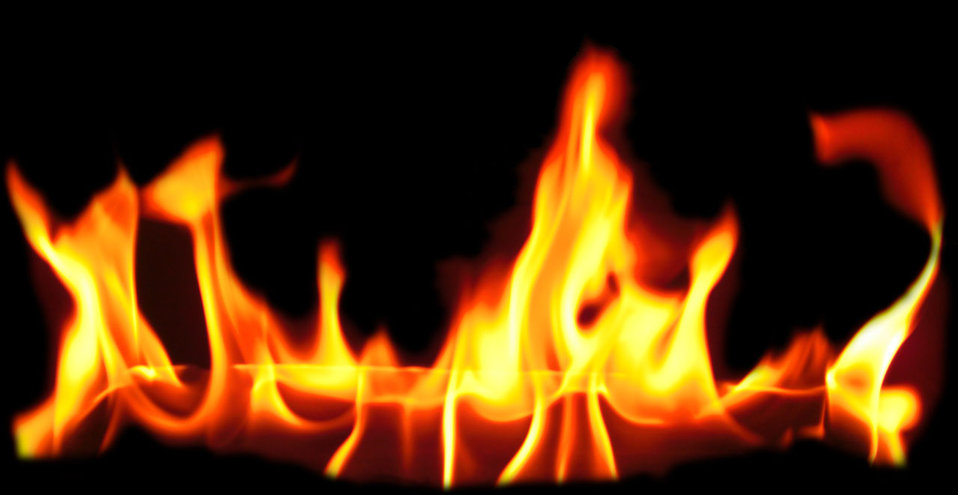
Fire on a black background..